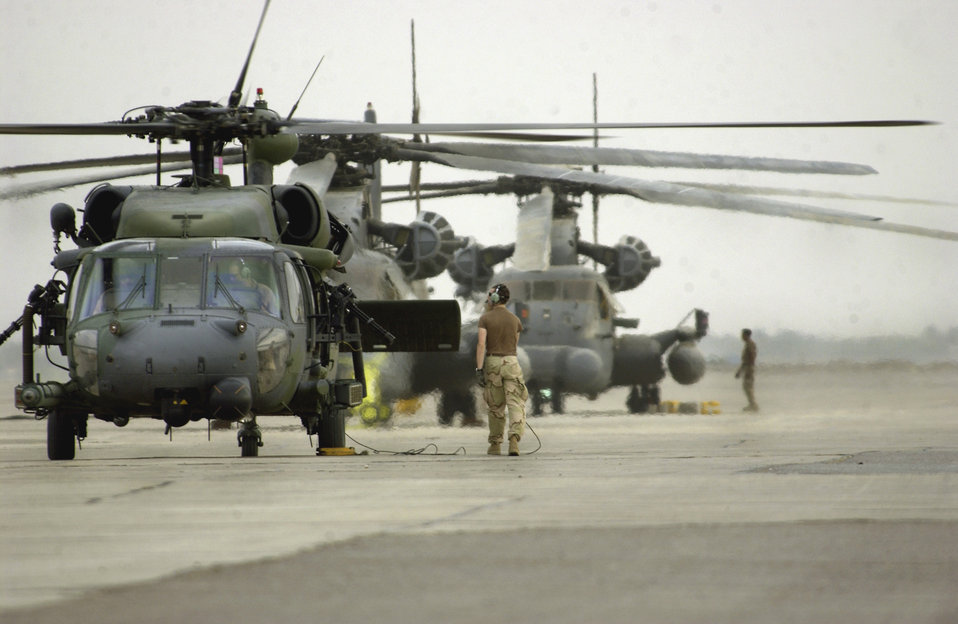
Hawk check

BAGHDAD INTERNATIONAL AIRPORT, Iraq -- Senior Airman Josh Crowell checks an HH-60 Pave Hawk after a maintenance engine run up. He is a crew chief in the New York Air National Guard's 101st Expeditionary Rescue Squadron.